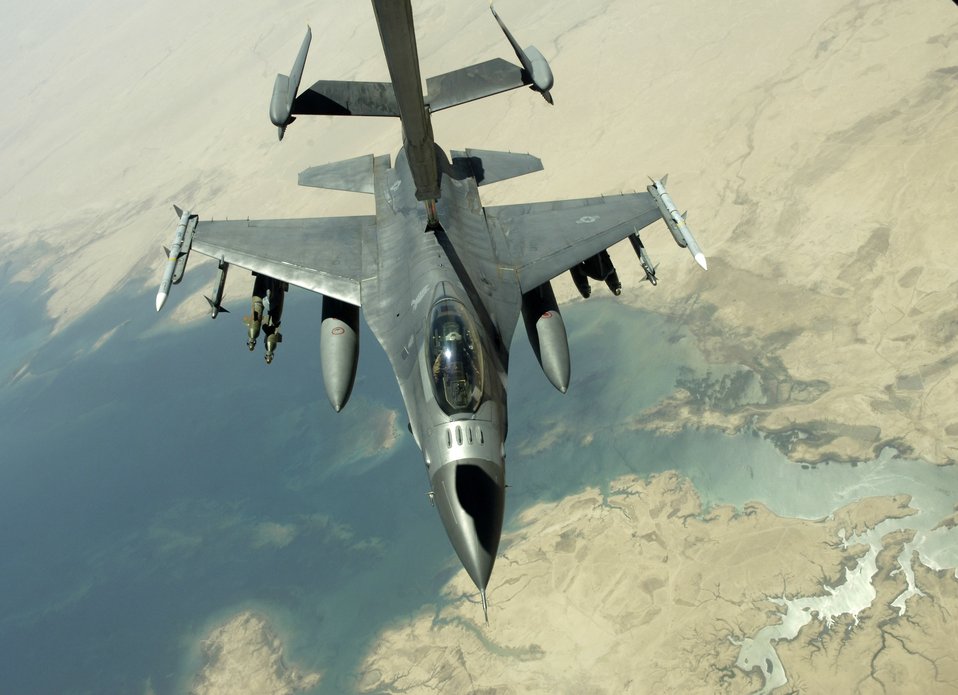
Two refuelers, one squadron can handle any situation

An F-16 Fighting Falcon refuels from a KC-10 Extender while flying a close-air-support mission over Iraq in support of Operation Iraqi Freedom on July 18. The KC-10 is with the 908th Expeditionary Air Refueling Squadron in Southwest Asia.